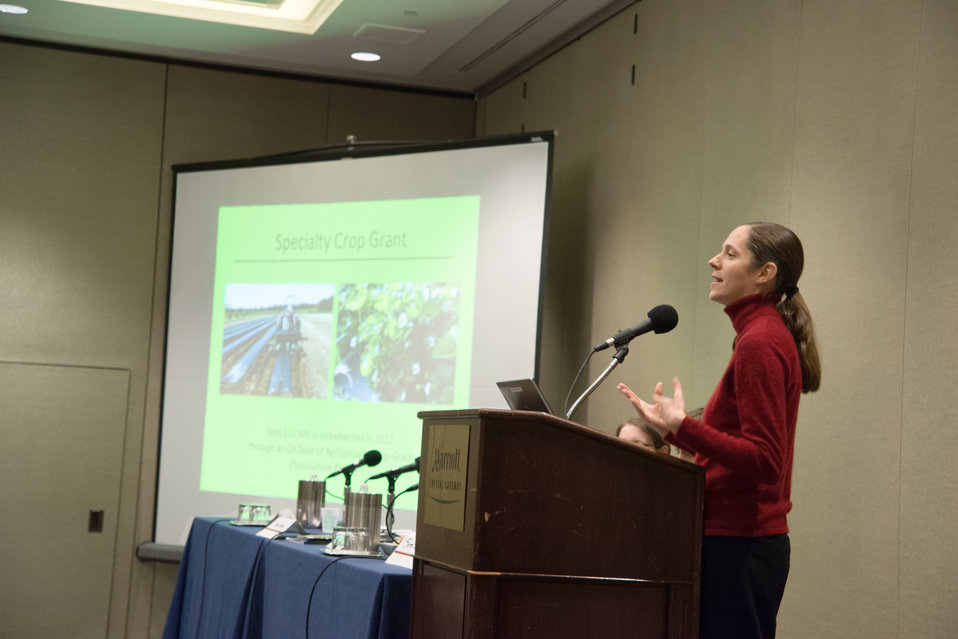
National Young Farmers Coalition Interim Director Emily Oakley speaks at the plenary panel on Know Your Farmer, Know Your Food: The Past, Present and Future at the Agricultural Outlook Forum on Friday, Feb. 21, 2014 in Arlington, VA. The panel reviewed the goals and objectives of Know Your Farmer, Know Your Food (KYF2) initiative. The panel spoke about how the initiative works; what has been accomplished to date; how local food systems can use KYF2 and other U.S. Department of Agriculture (USDA) programs to improve the supply, distribution, and demand for local foods; how KYF2 and Federal –State-local partnerships work together to promote local food production and distribution; and highlighted the initiative’s work to grow the local food economy in Appalachia. The U.S. Department of Agriculture’s (USDA) annual Agricultural Outlook Forum brings together the agricultural community to discuss policy, trade, science, rural development, and the economic outlook for the coming year. The Forum also focuses on forestry, health and nutrition issues, and the changing dynamics and face of rural America.